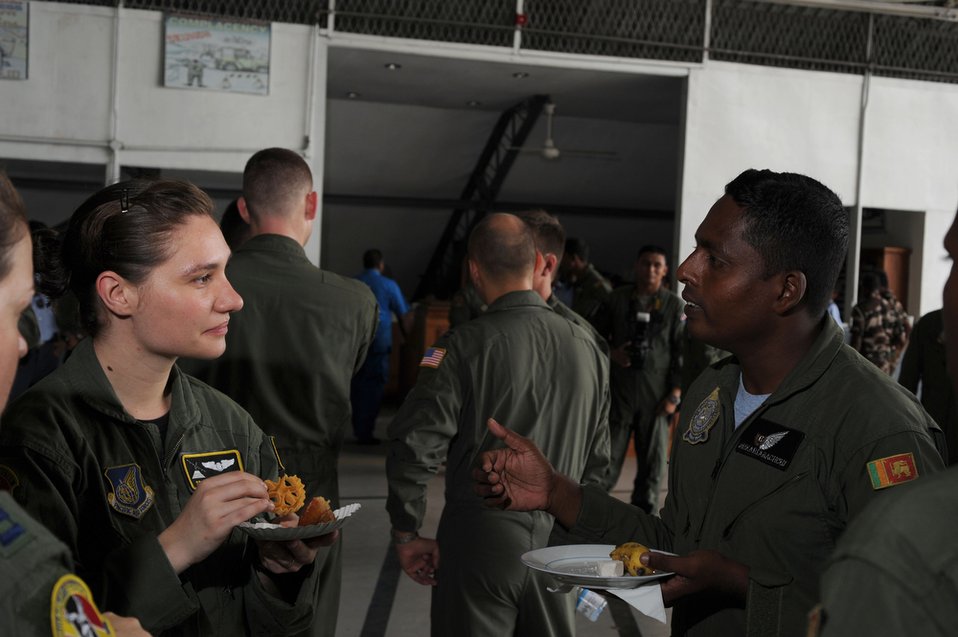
PACIFIC AIRLIFT RALLY 2011

Senior Airman Monica Oshin has a conversation with Sri Lanka Air Force Flt. Sgt. Adika Riarachichi during a meet-and-greet session for the start of Pacific Airlift Rally 2011 Aug. 22, 2011, at Ratmalana Airport, Colombo, Sri Lanka on Aug. 22 for the start of Pacific Airlift Rally 2011. PAR is a Pacific Air Force sponsored, biennial multilateral tactical military airlift symposium. The exercise enhances military airlift interoperability and cooperation between the nations of the Indo-Pacific region.